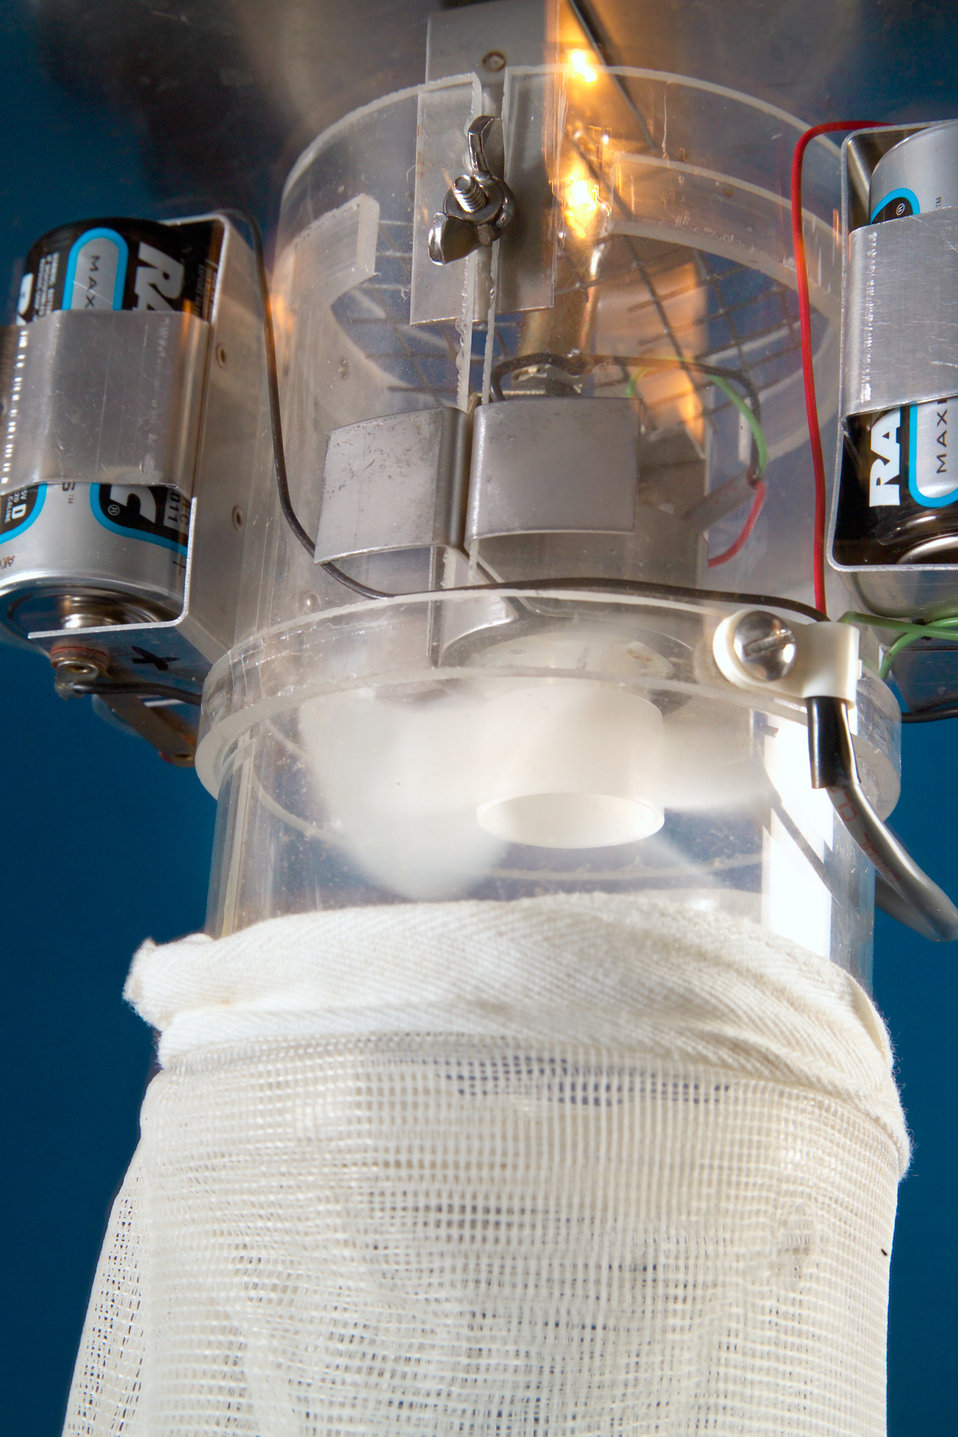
This is a frontal close-up of the light trap power source and light used to trap mosquitoes tested for the presence of pathogens.